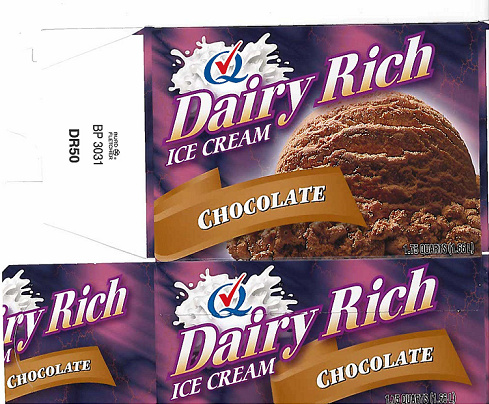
RECALLED - Chocolate Ice Cream

February 14, 2014 – Product Recall – Ice Cream Specialties Issues Allergy Alert On Undeclared Peanut Allergen In Dairy Rich Chocolate Ice Cream.